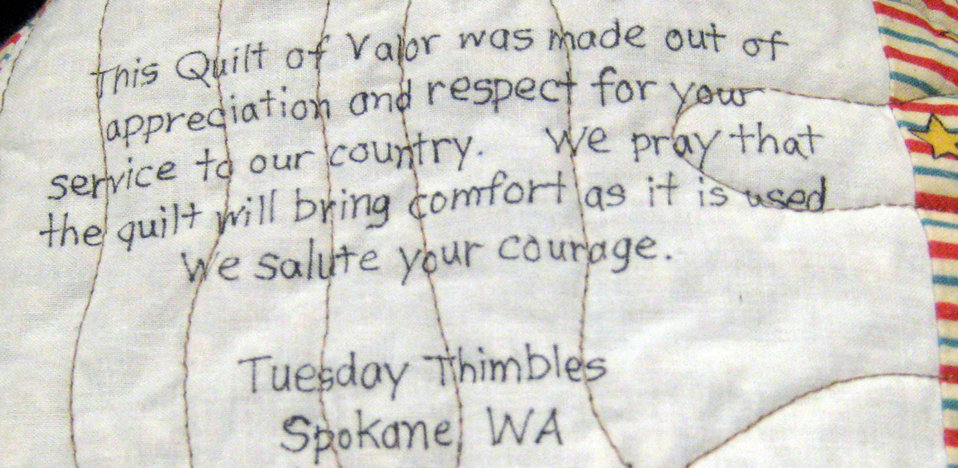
Quilts of Valor a comfort for complex wartime emotions

Hundreds of individual quilters and quilting clubs from every region of the nation make Quilts of Valor. This label is on a quilt donated by the Tuesday Thimbles quilting club of Spokane, Wash.